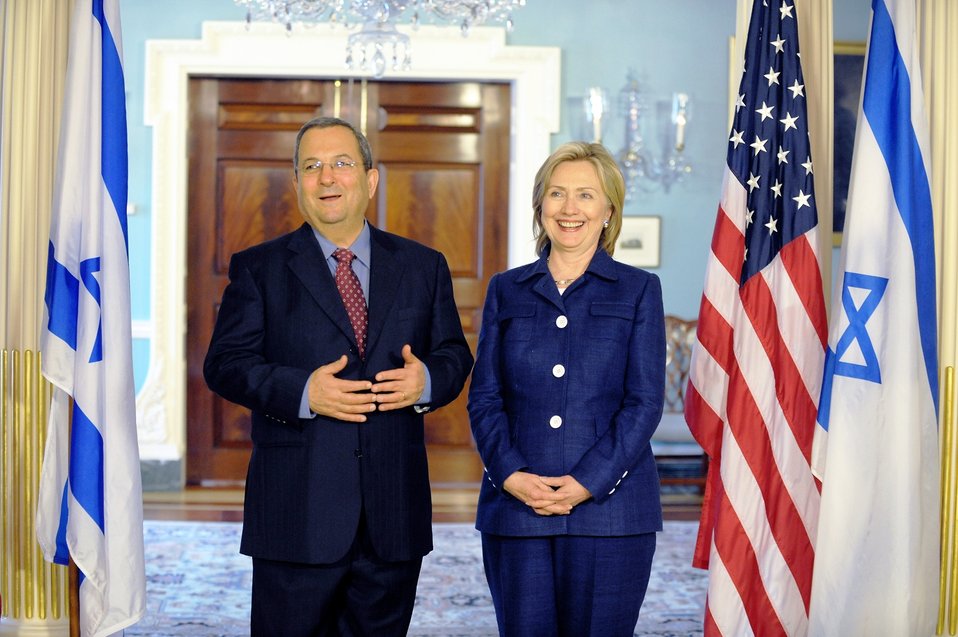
Secretary Clinton Hosts Bilateral Meeting With Israeli Defense Minister Barak

U.S. Secretary of State Hillary Rodham Clinton holds a bilateral meeting with Israeli Defense Minister Ehud Barak at the U.S. Department of State in Washington, D.C., on June 23, 2010.